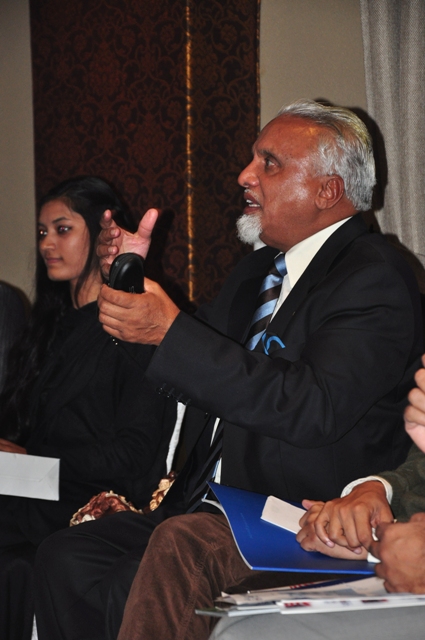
Education Workshop 263